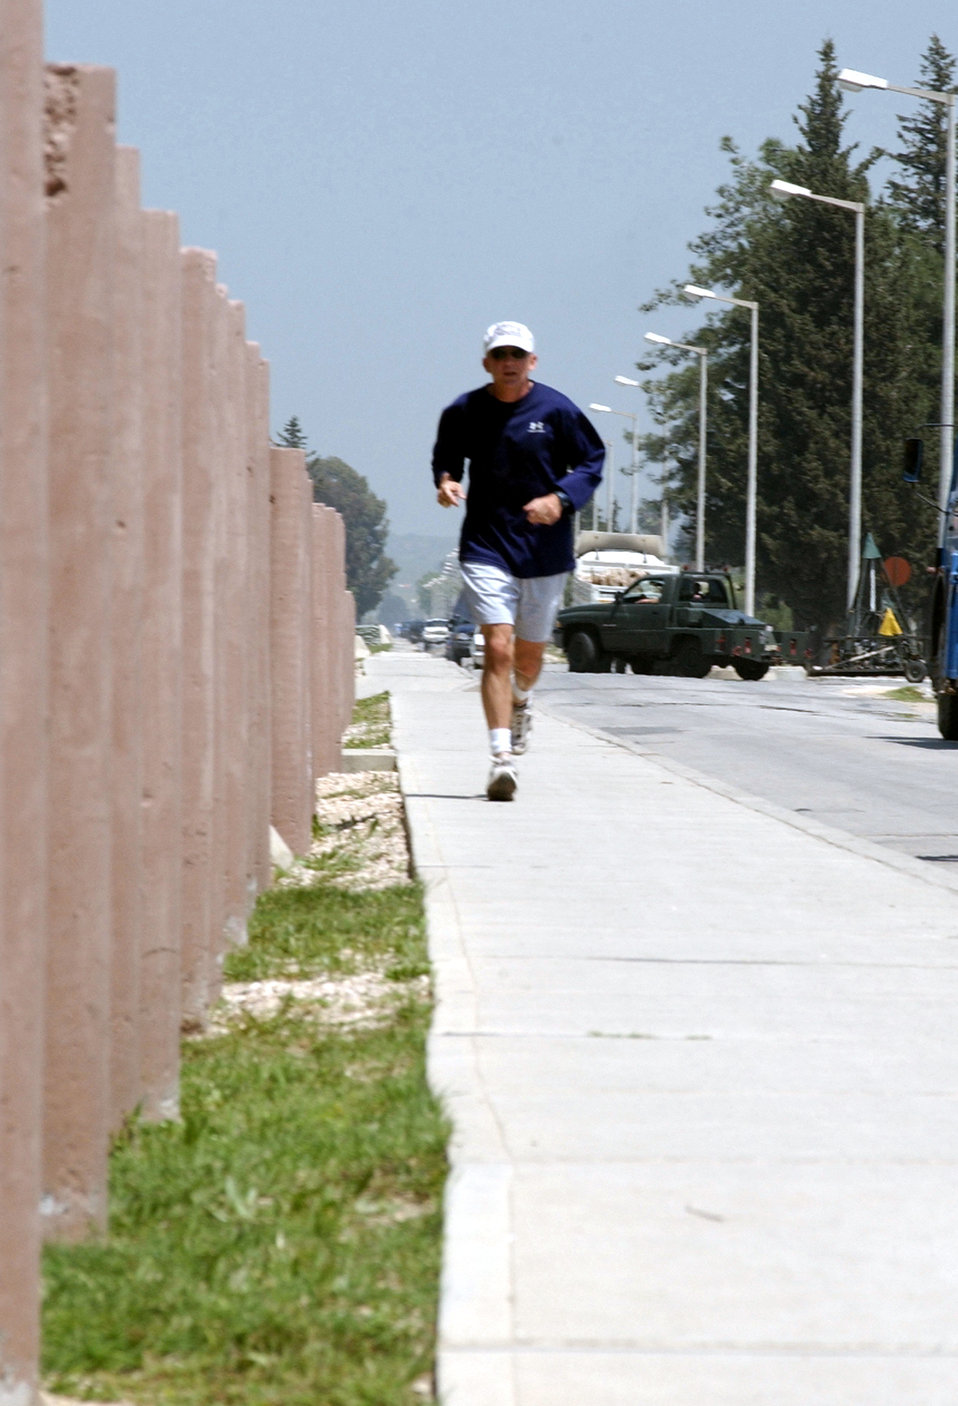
The home stretch

INCIRLIK AIR BASE, Turkey -- Lt. Col. Rod Matte, executive officer to the Operation Northern Watch commanding general, completes his goal of running 1,000 miles while deployed here. Matte was part of the more than 1,400 British, Turkish and U.S. troops who were deployed to enforce the no-fly zone in northern Iraq.